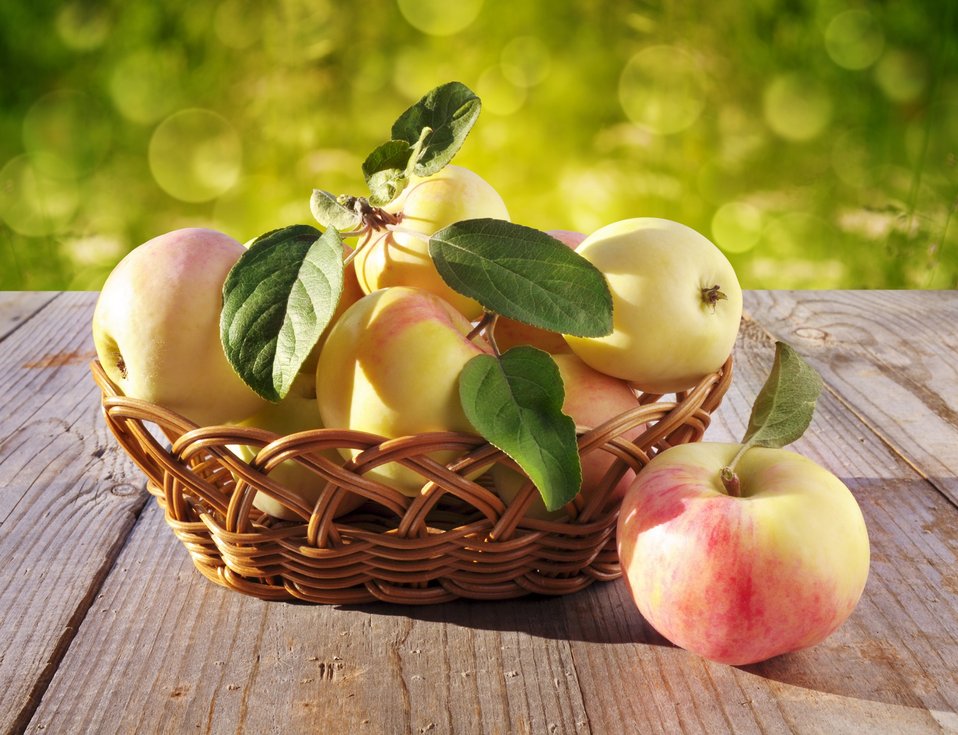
Basket with apples

Basket full of apples.